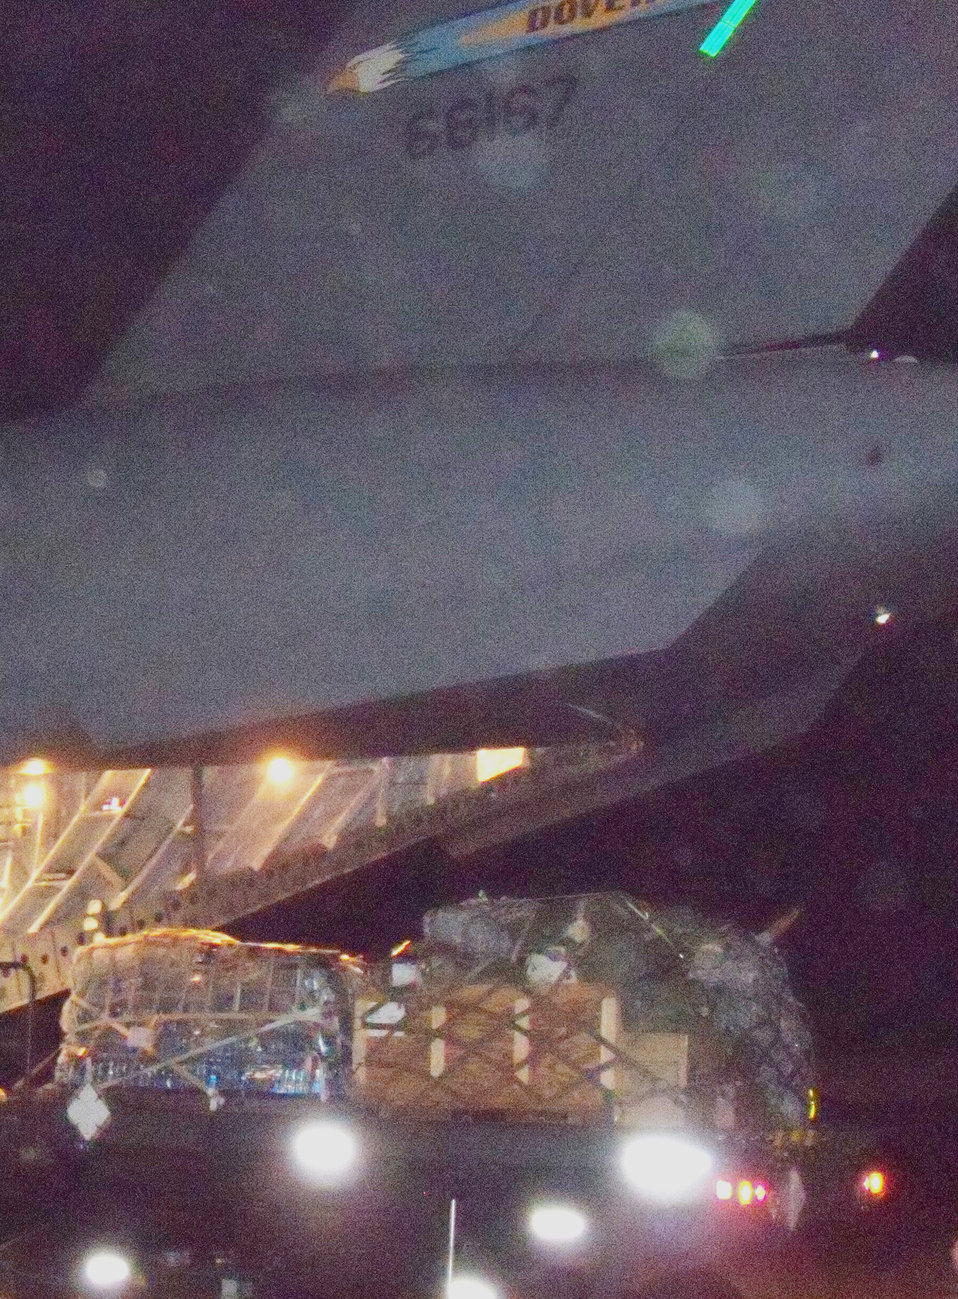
Operation Unified Response

A C-17 Globemaster III crew from the 3rd Airlift Squadron at Dover Air Force Base, Del., drops off 90,000 pounds of disaster relief aid at the Port-au-Prince airport in Haiti on Jan. 19, 2010, in support of Operation Unified Response. After unloading the cargo, 36 evacuees boarded the aircraft which flew them to the U.S.